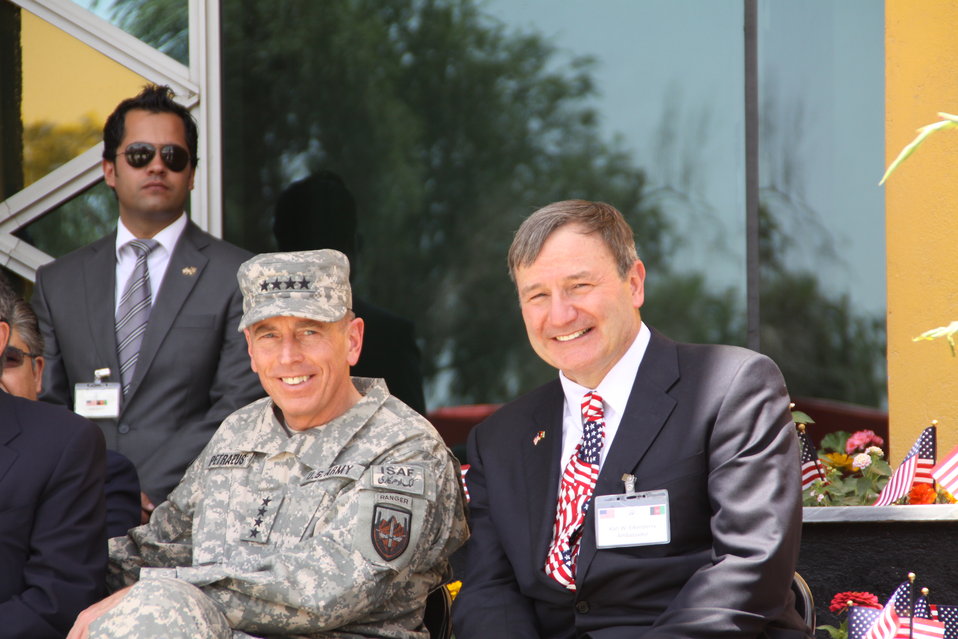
Kabul Official July 4th Celebration